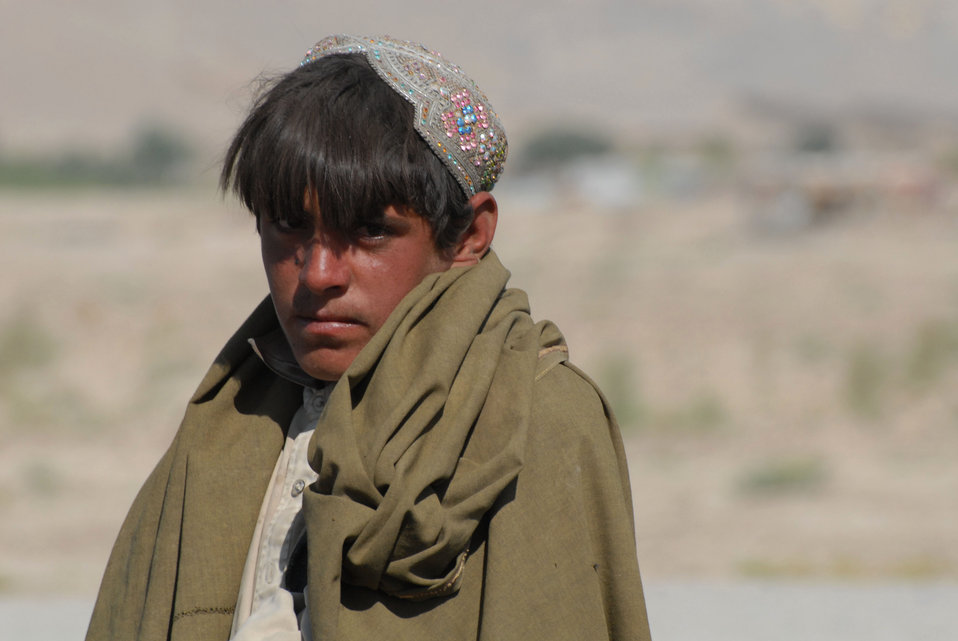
'On the Road' in Kandahar